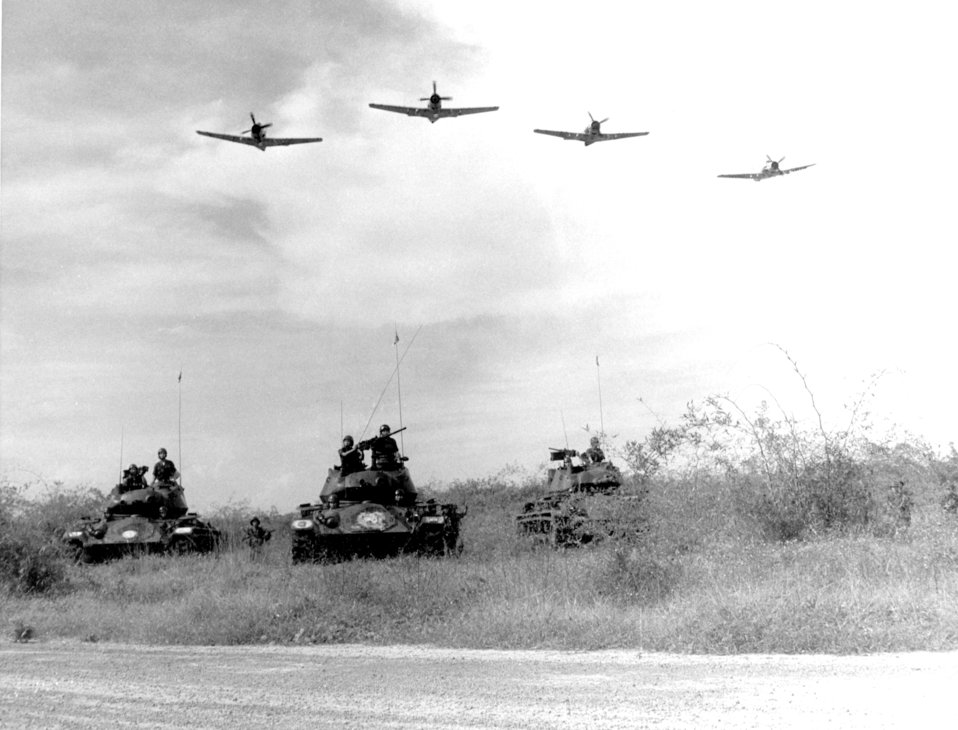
A-1H aircraft

1960s -- A-1H aircraft make a low level pass over Vietnamese tanks and ground troops on Nov. 21, 1963 during a training exercise somewhere in South Vietnam.